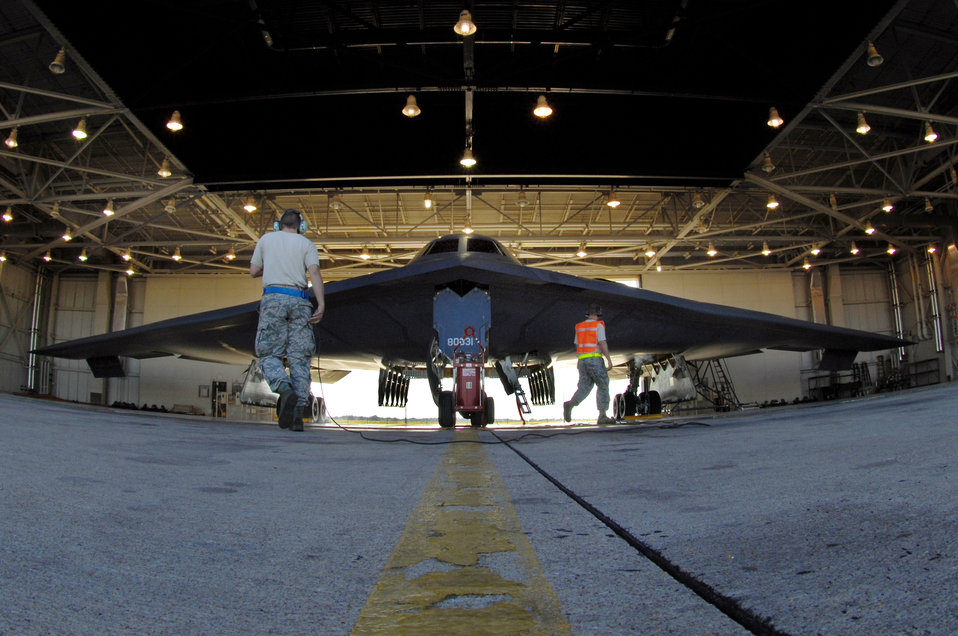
Ready for takeoff

Senior Airman Douglas Anthony and Airman Kyle Joyner, both 509th Aircraft Maintenance Squadron crew chiefs, perform pre-flight checks on a B-2 Spirit before takeoff Aug. 22 at Whiteman Air Force Base, Mo. Twenty B-2 bombers are assigned to the 509th Bomb Wing. The B-2 brings massive firepower to bear, in a short time, anywhere on the globe through previously impenetrable defenses.